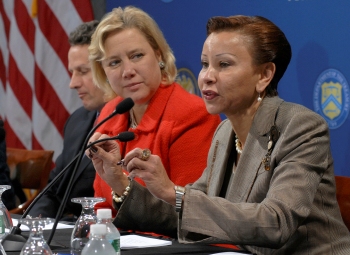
Treasury and SBA Host a Small Business Financing Forum

Rep. Nydia Velázquez (NY-12) addresses the Small Business Financing Forum at the Treasury Department.